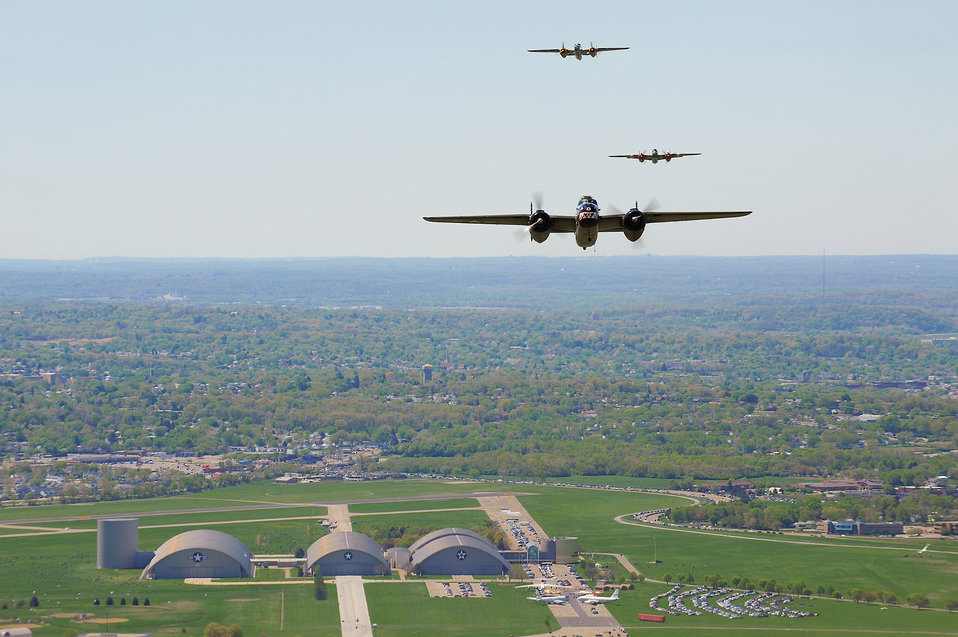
68th Doolittle Raiders Reunion

Vintage B-25 Mitchell bombers fly over the National Museum of the U.S. Air Force at Wright-Patterson Air Force Base, Ohio, during a memorial flight honoring the Doolittle Tokyo Raiders on April 18, 2010. The 68th Doolittle Raiders' reunion commemorates the anniversary of the Doolittle Tokyo Raid. On April 18, 1942, U.S. Army Air Forces Lt. Col. Jimmy Doolittle's squad of 16 B-25 Mitchell aircraft bombed Japanese targets in response to the attack on Pearl Harbor.